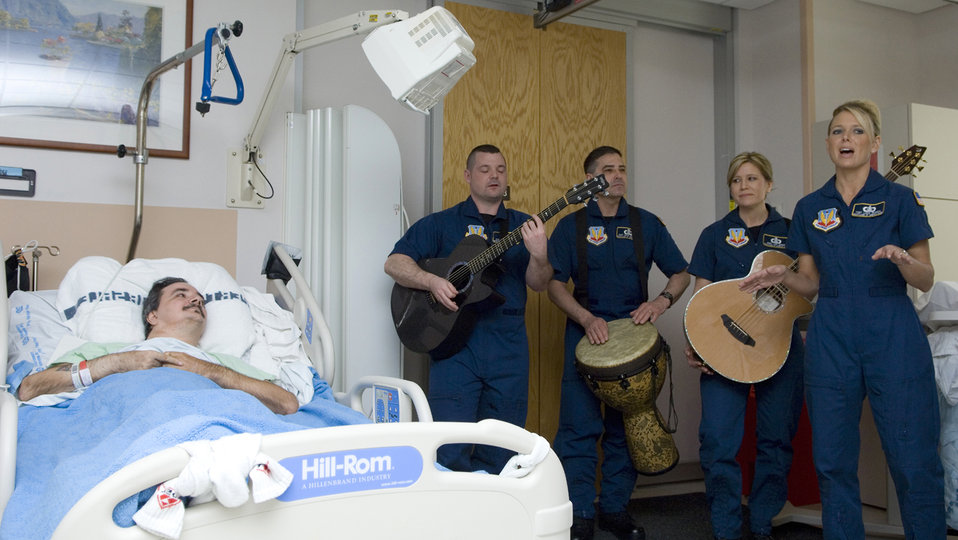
General leads morale tour at Tampa VA hospital

Members of the Air Force Heartland of America Band's Night Wing perform for a servicemember April 5 at the James A. Haley Veterans' Hospital in Tampa, Fla. The band performed throughout the hospital to lift the spirits of military members. Night Wing is an ensemble of the Heartland of America Band stationed at Offutt Air Force Base, Neb.